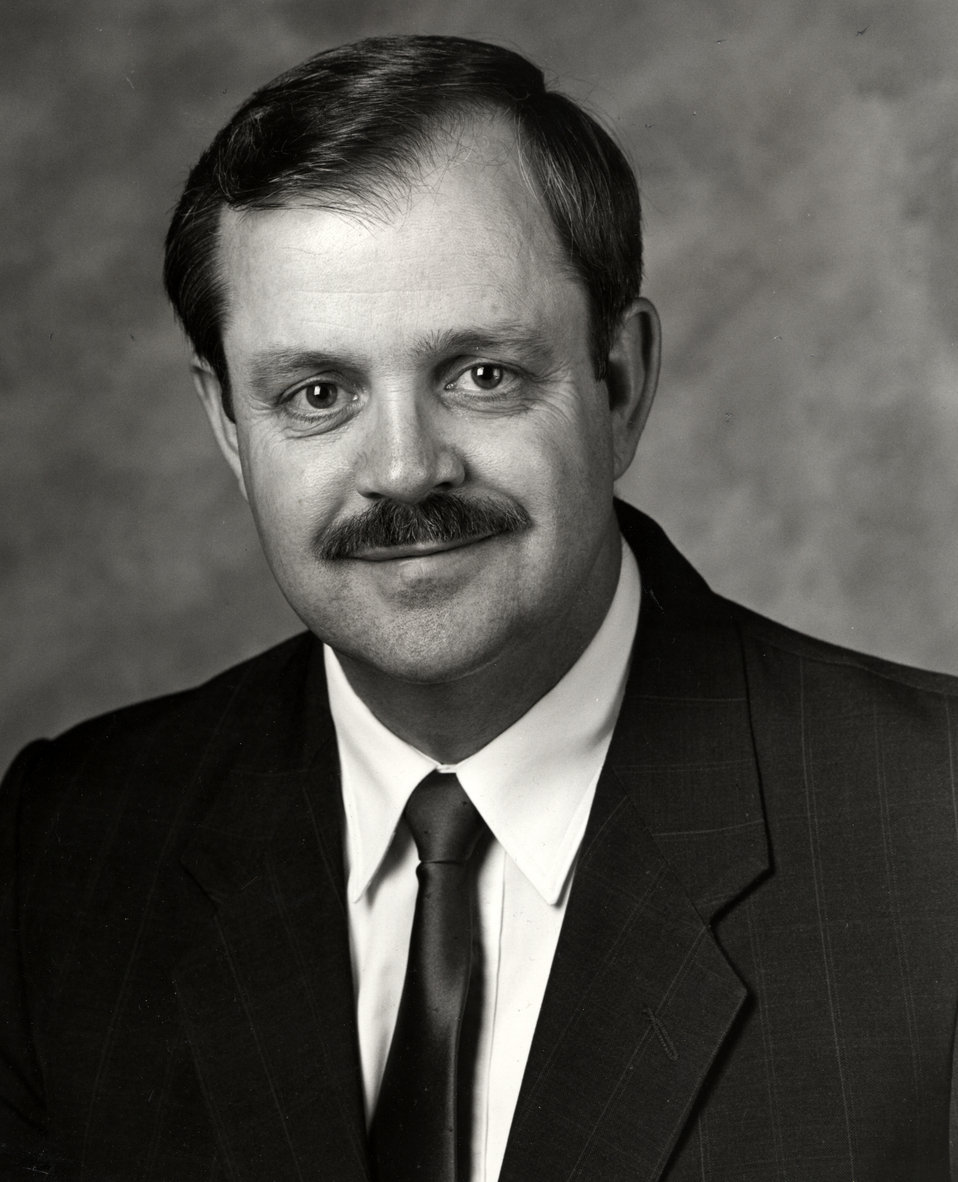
This portrait featured recently retired, former CDC, National Center for Health Marketing, Health Communications Specialist, Richard L. "Dick" Welch.